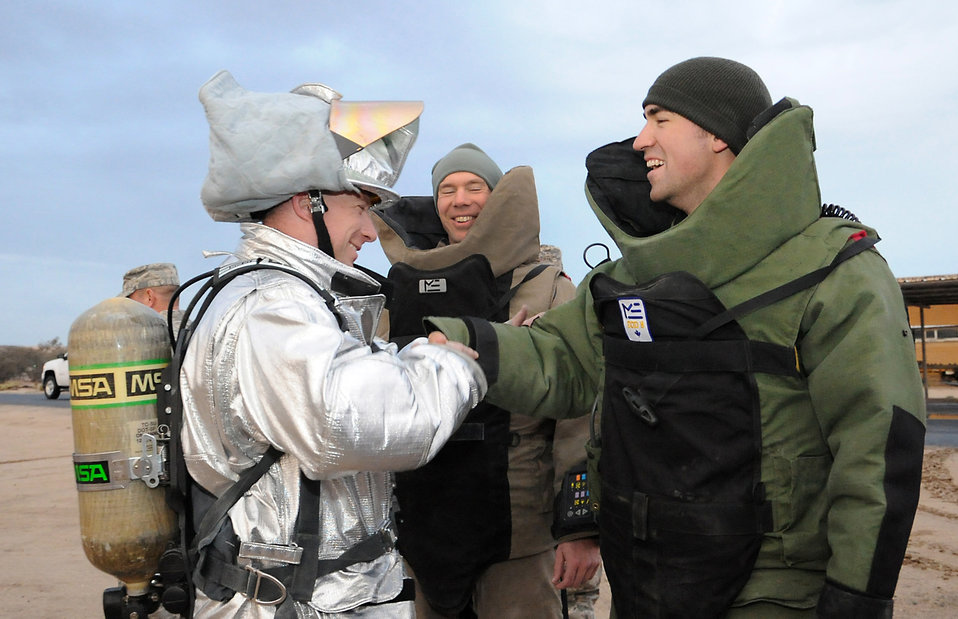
Southwest Asia fun run

Staff Sgt. Joe Ruppenthal (left) shakes hands with Senior Airman Philip Young before the start of the explosive ordnance disposal fun run Dec. 31, 2010, at an air base in Southwest Asia. The fun run was part of a fundraiser and to raise awareness for explosive ordnance disposal Wounded Warrior, Hope for the Warriors and the EOD Memorial. Sergeant Ruppenthal is a firefigher and Airman Young is an EOD journeyman with the 386th Expeditionary Civil Engineer Squadron.